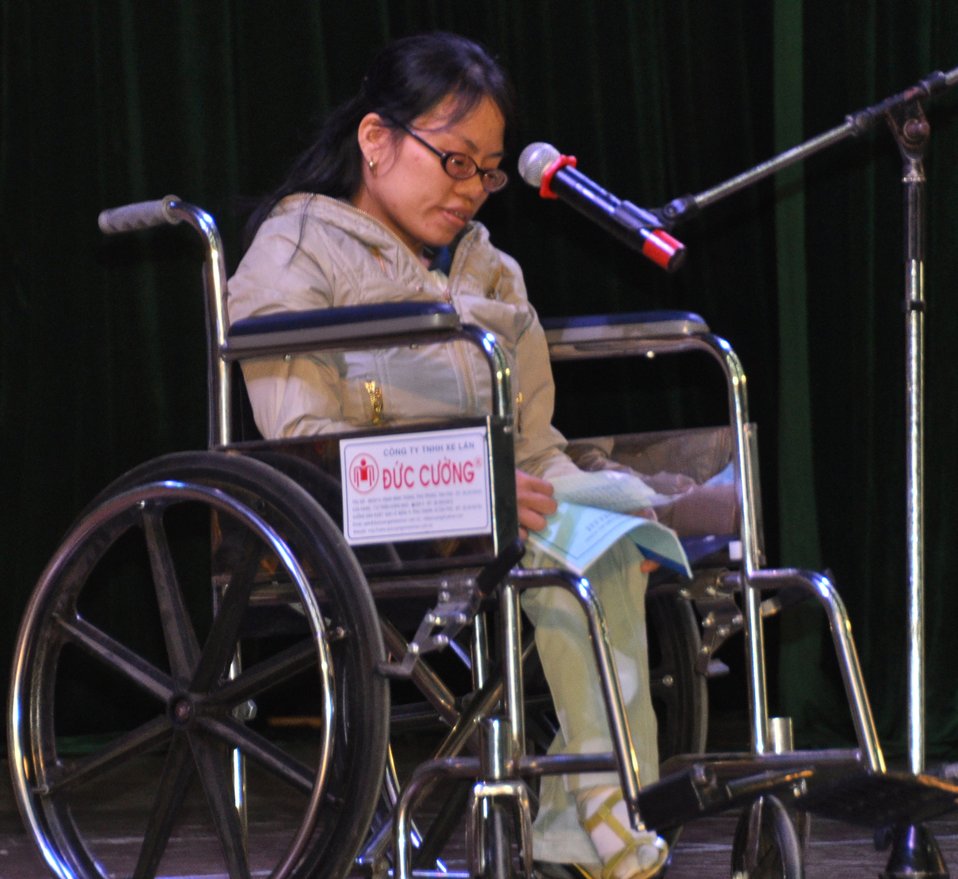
USAID Supports Commemoration of International Day of Persons with Disabilities 2013 in Danang

Danang, December 3, 2013.